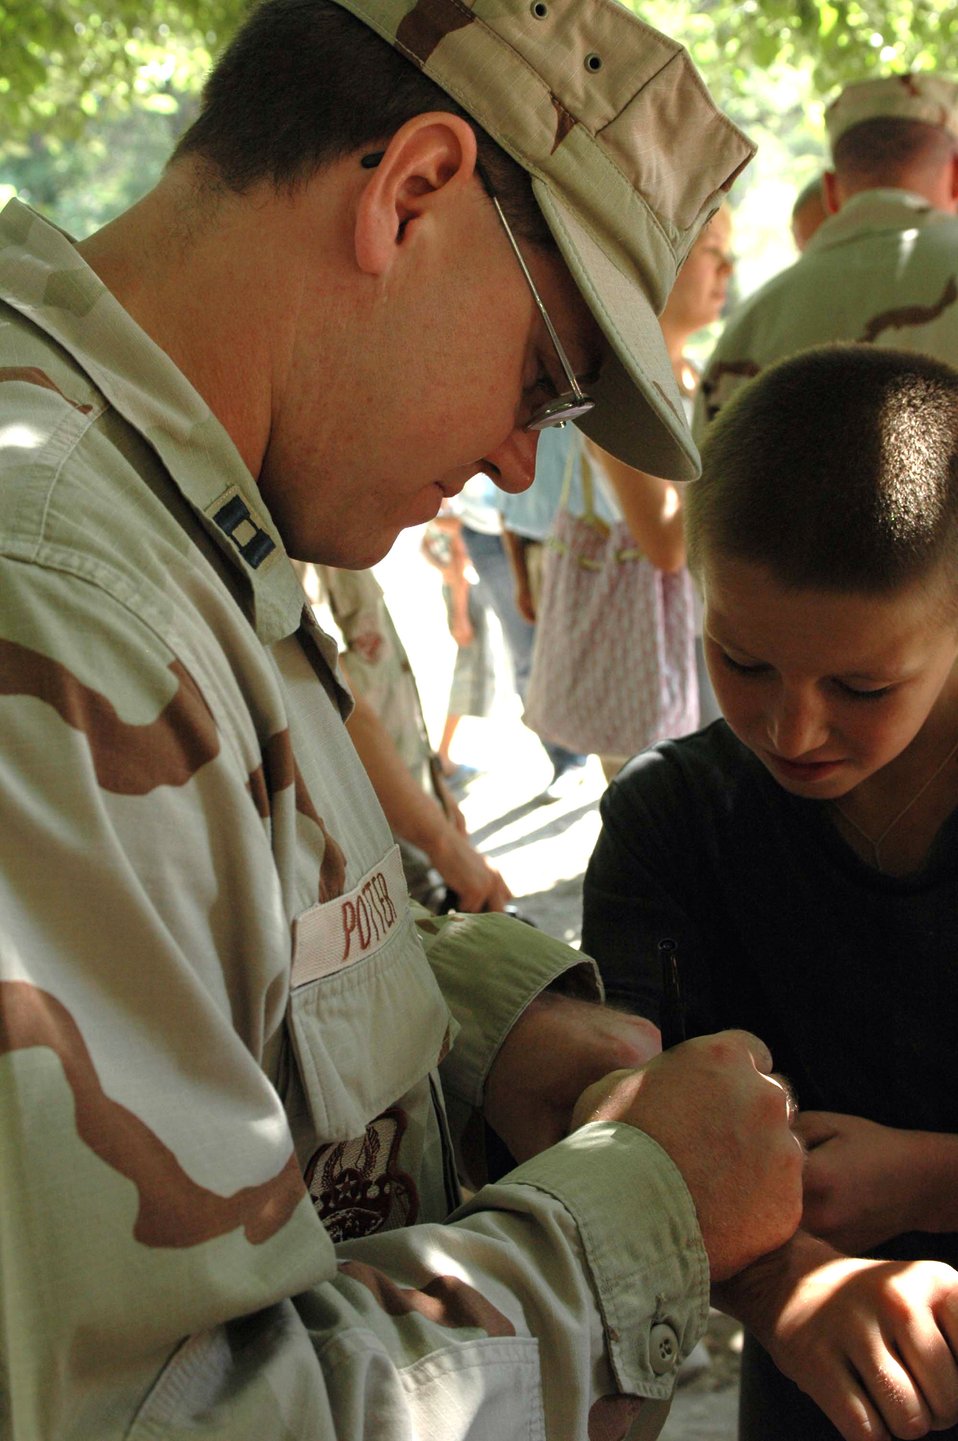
376th ESFS dedicates new children's playground

Capt. Eric Potter, 376th Air Expeditionary Wing, Manas Air Base, Kyrgyzstan, gives an Oktobersky Village, Kyrgyzstan child a gift during the dedication ceremony for a new children's playground. Members from the 376th AEW were on hand to dedicate the playground, built by members of the 376th Expeditionary Security Forces and Civil Engineer squadrons. Captain Potter is deployed from the 453rd Electronic Warfare Squadron, Lackland Air Force Base, Texas.